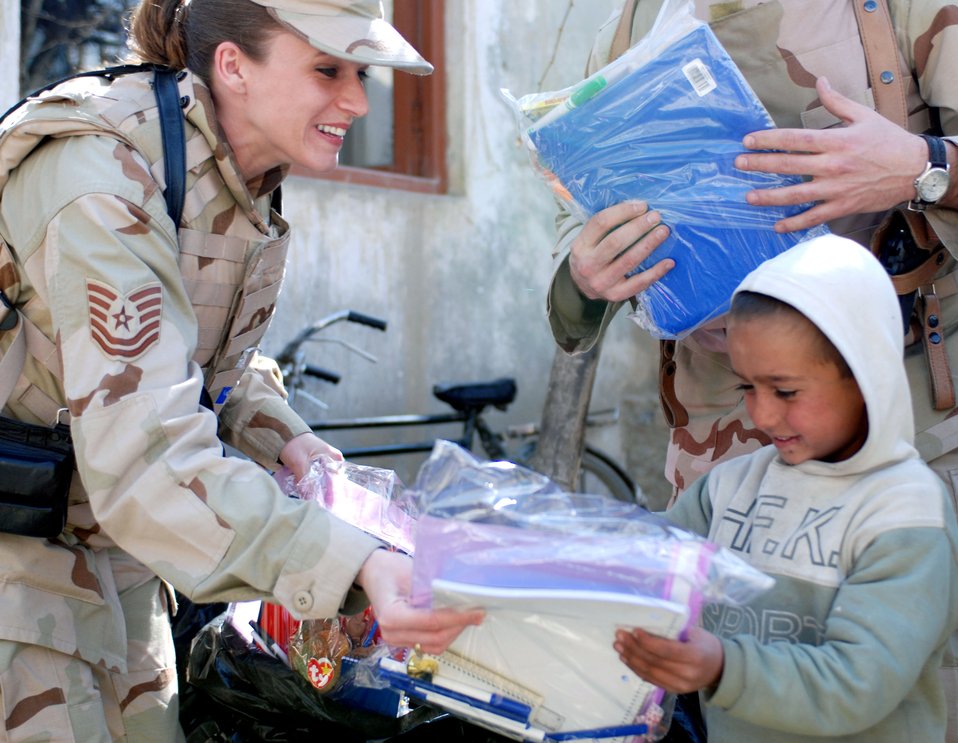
Afghan children get geared up for school

Tech. Sgt. Shelly Ward distributes school supplies to children March 8 at a school in downtown Kabul, Afghanistan. Sergeant and other volunteers from the Combined Security Transistion Command volunteered in the community relations trip sponsored by coalition forces.